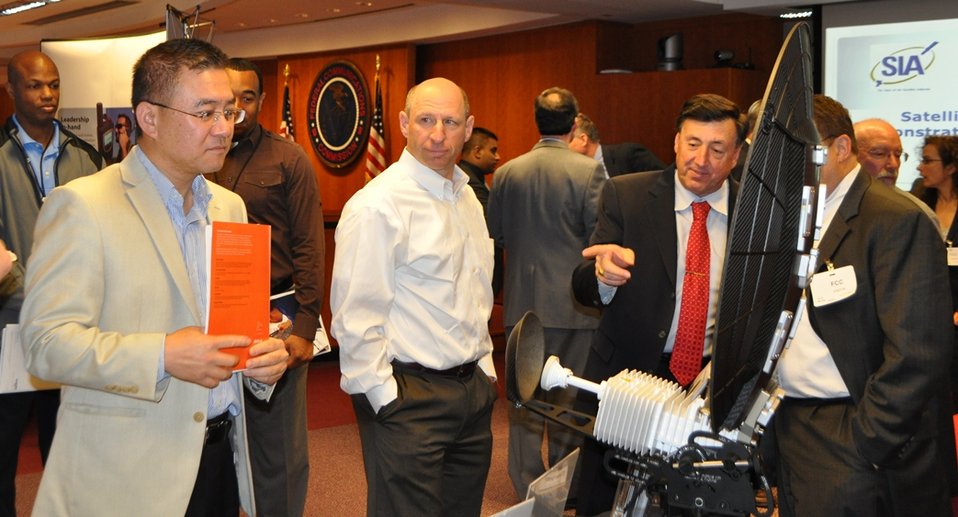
5.14.2014 Satellite Technology Demonstration

Satellite Technology Demonstration at FCC